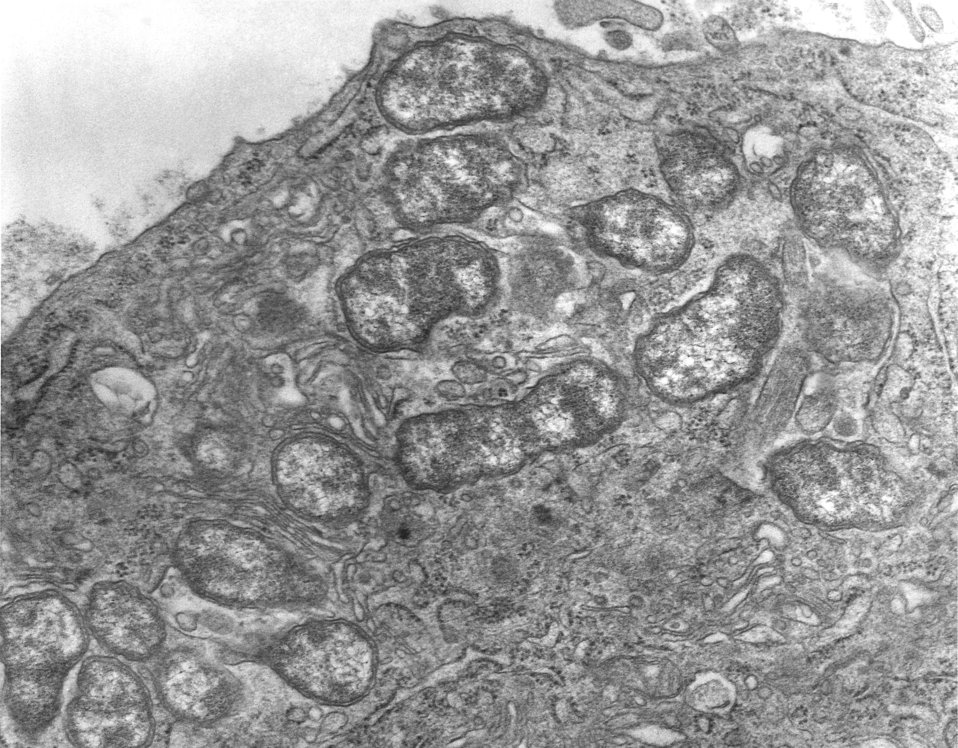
This 1976 transmission electron micrograph (TEM) depicted a hypertrophic peritoneal mesothelial cell of mouse that had been experimentally infected intraperitoneally with Orientia tsutsugamushi rickettsial micro-organisms. In this photomicrograph there were several organisms visible free within the mesothelial cell's cytoplasm.